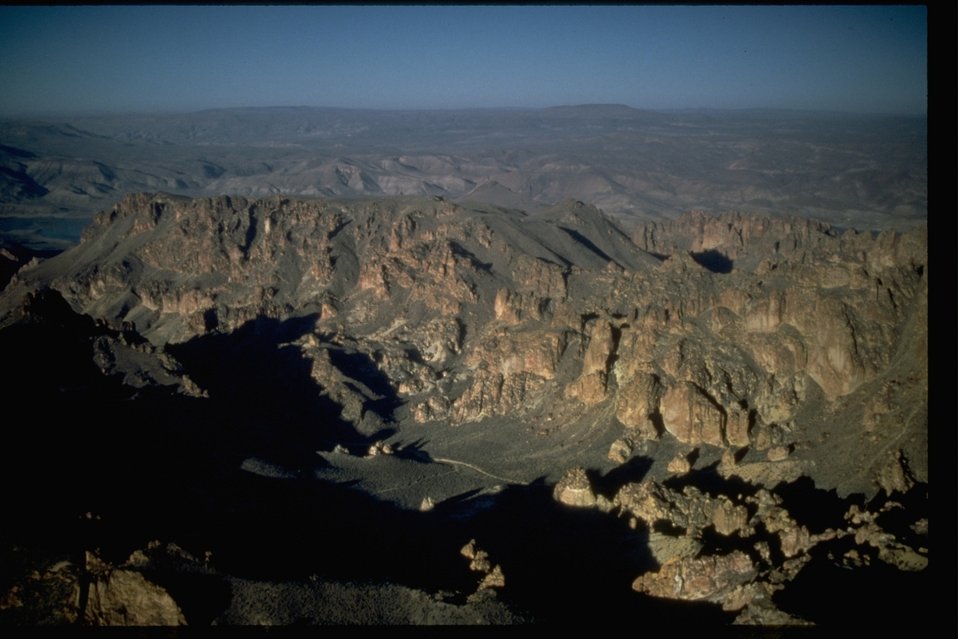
Looks like Leslie Gulch or Honeycombs Wilderness Study Areas.